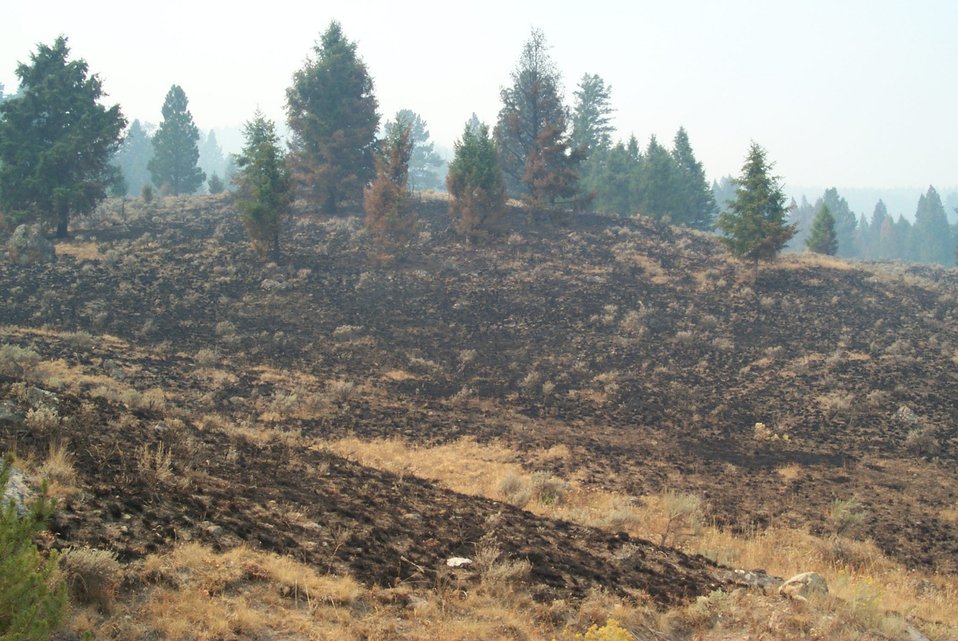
Burn area Fire Clearwater Fire Salmon Field Office USRD Upper Snake River District